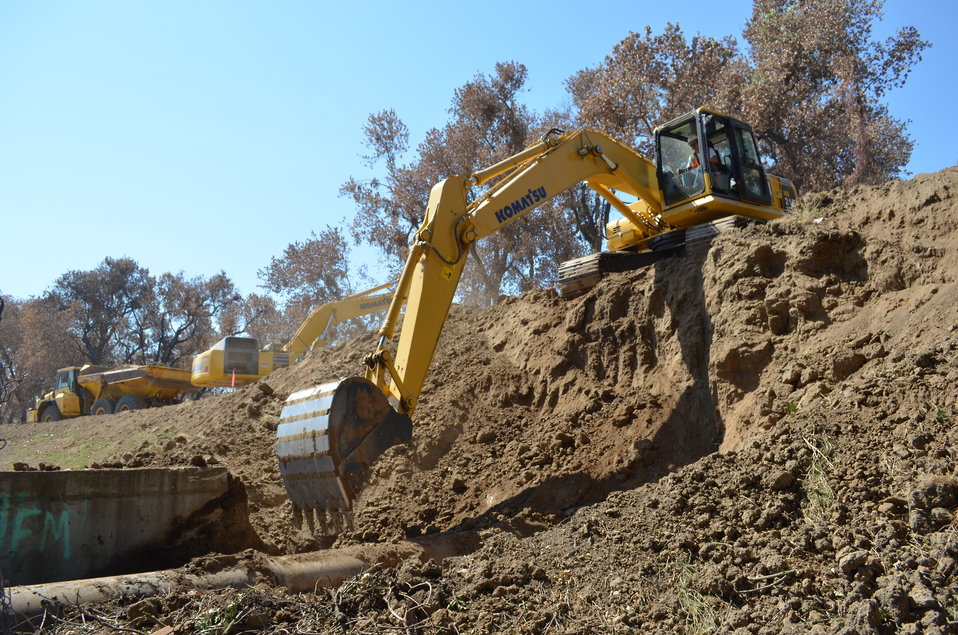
Inactive sewer line obstructing north Sacramento levee work

U.S. Army Corps of Engineers Sacramento District levee work is underway Aug. 21, 2013 along the north bank of the American River in north Sacramento, Calif. Complicating the work are land easement rights, an inactive railroad line and an assortment of buried utilities, such as the sewer line shown, that obstructed the Corps’ work near here more than a decade ago.